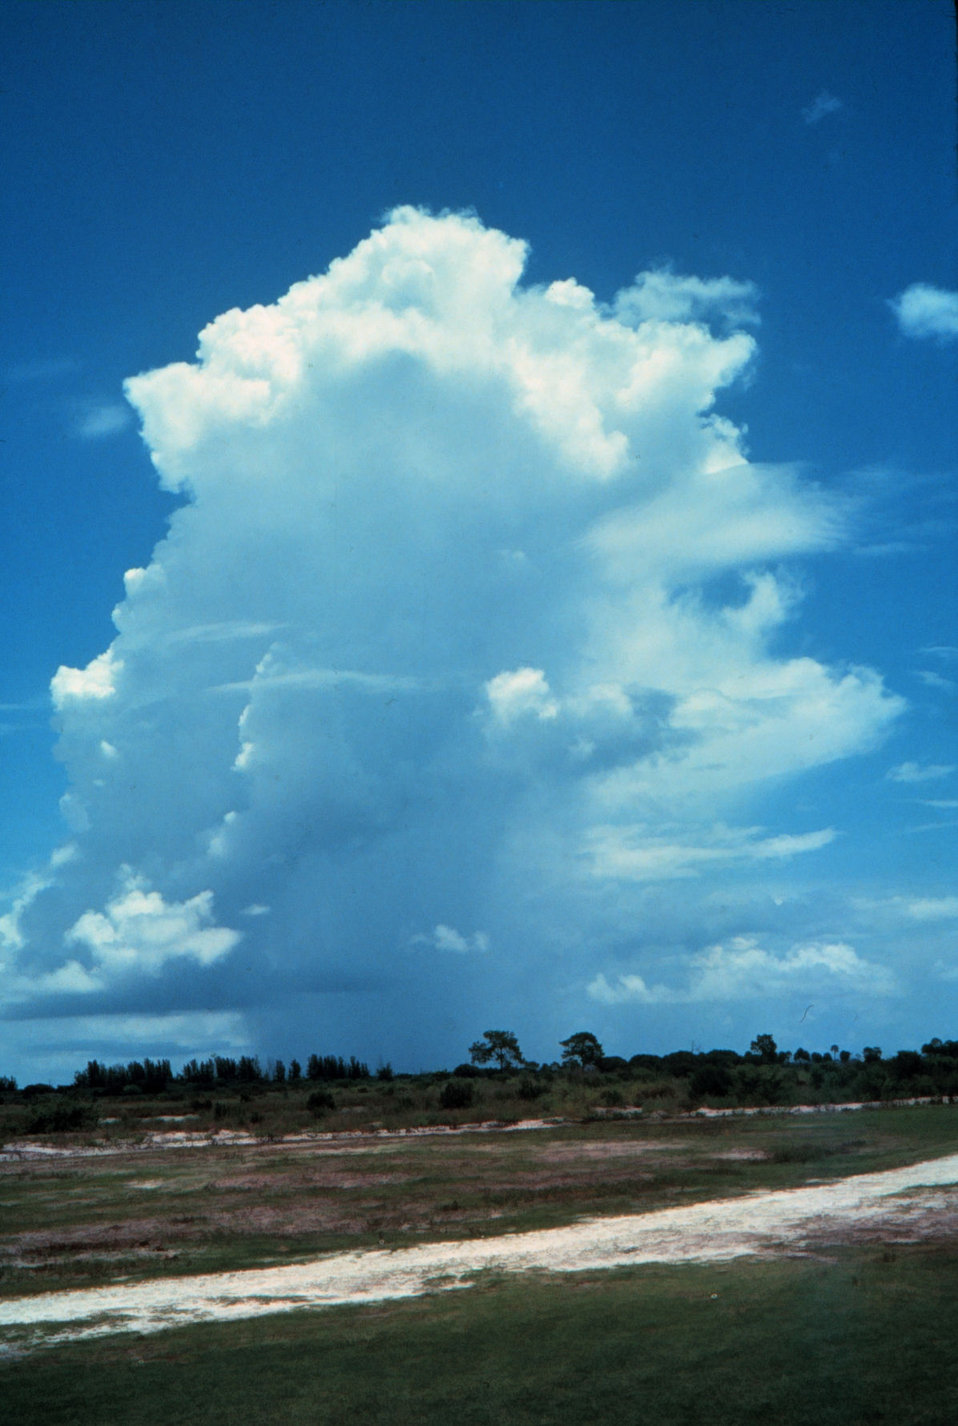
Towering cumulus